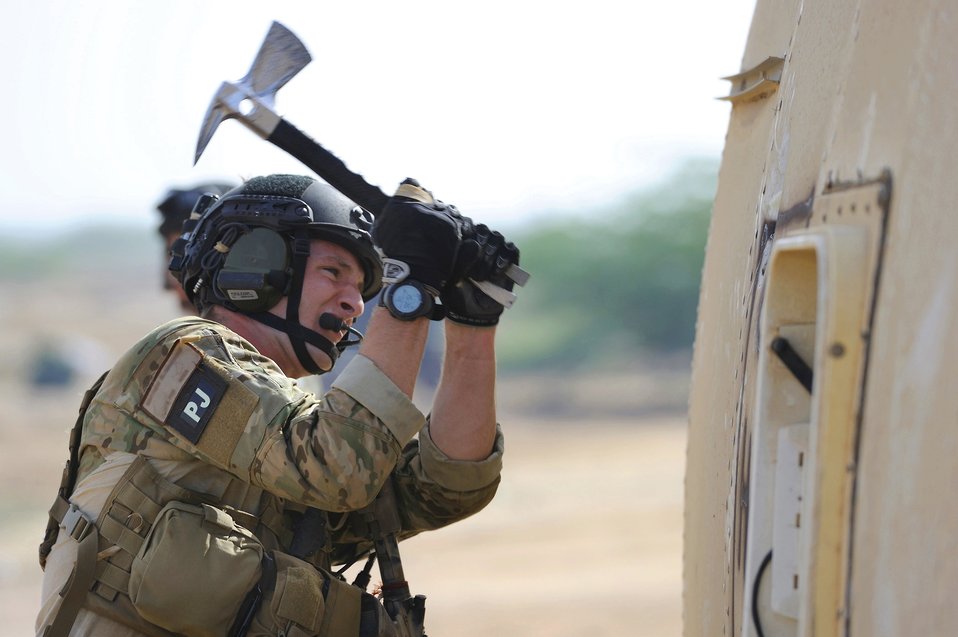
No more frustrations...

During a combat search and rescue extraction exercise, a pararescueman cuts his way into the